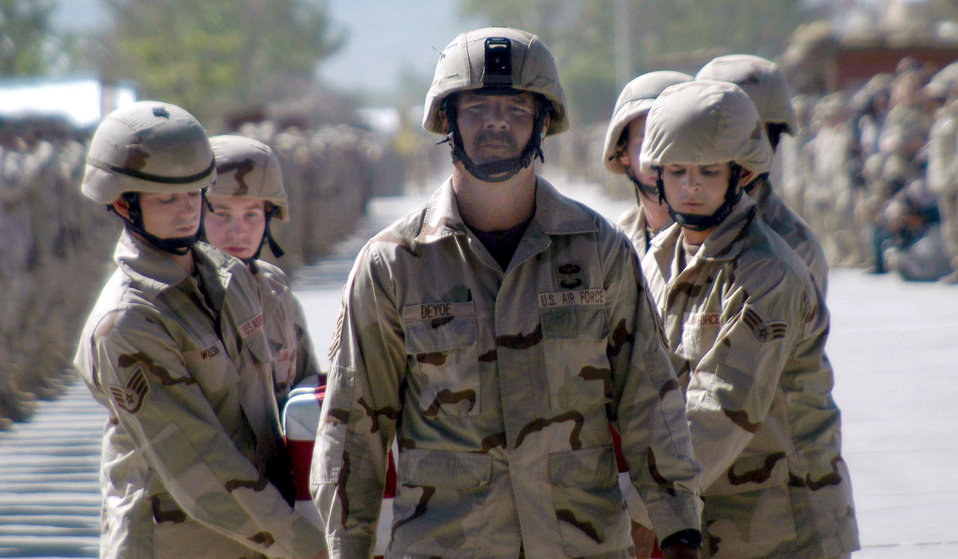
A solemn path

OPERATION ENDURING FREEDOM (AFPN) -- Master Sgt. Jerry Deyoe of the 682nd Air Support Operations Squadron leads a group of airmen carrying flag-draped transfer case to a C-130 Hercules at Bagram Air Base, Afghanistan, on April 26. Airman 1st Class Raymond Losano was killed April 25 during a firefight in Afghanistan near the Pakistan border. Losano, 24, was a tactical air command and control specialist assigned to the 14th ASOS at Pope Air Force Base, N.C.